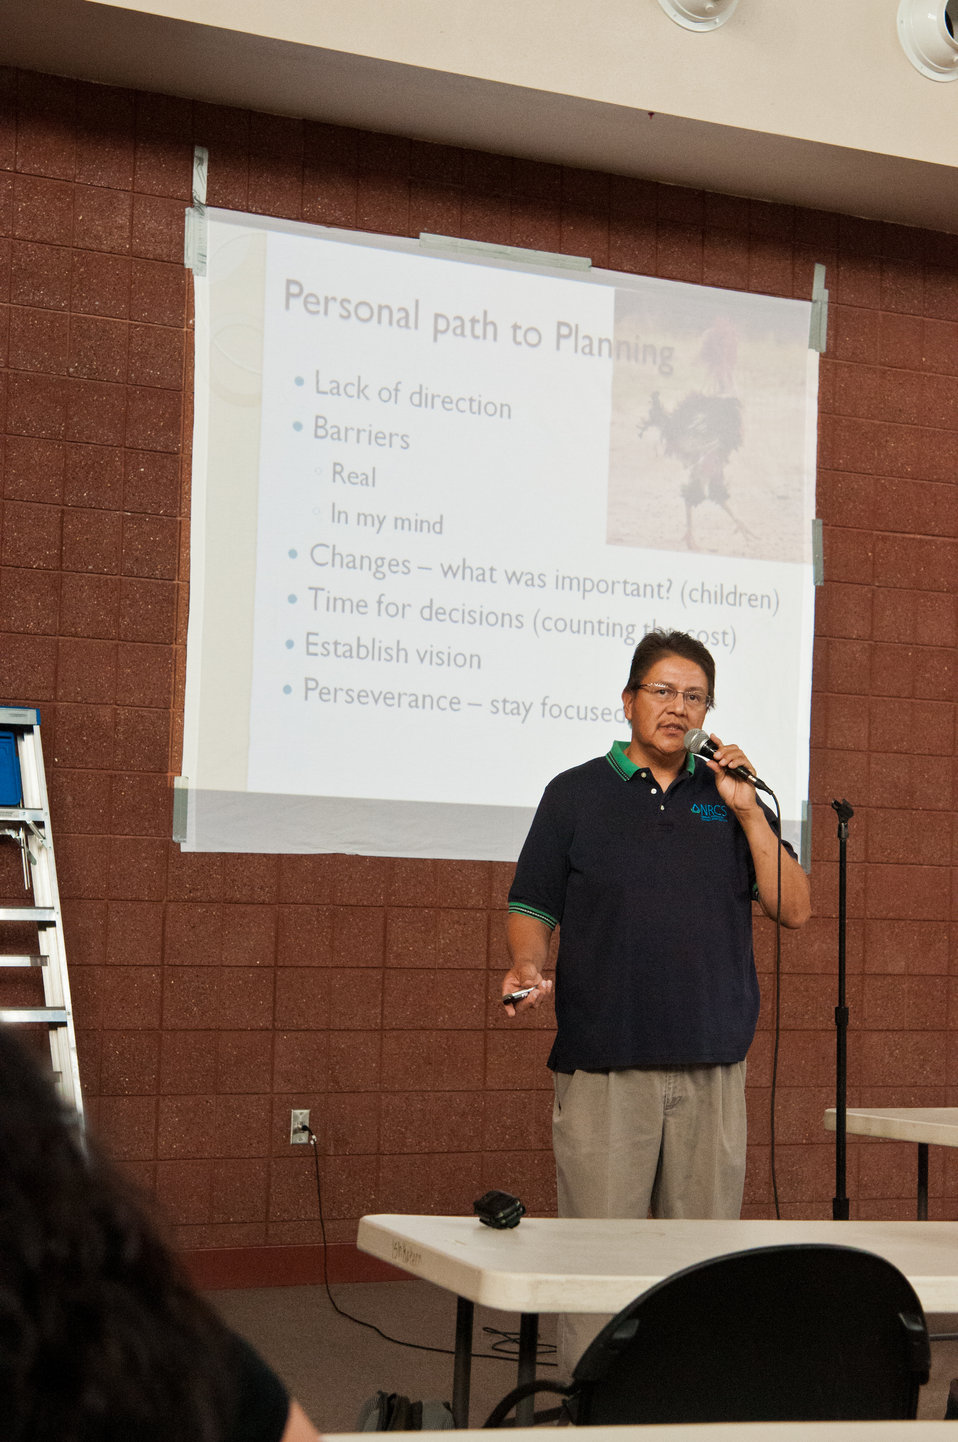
U.S. Department of Agriculture (USDA) Natural Resources Conservation Service (NRCS) District Conservationist Lorne Denetclaw speaks to community and tribal members during a Conservation Planning Meeting showcasing conservation programs offered by USDA was held at the Jicarilla Apache Nation in Dulce, NM on Wednesday, Jun. 12, 2013.